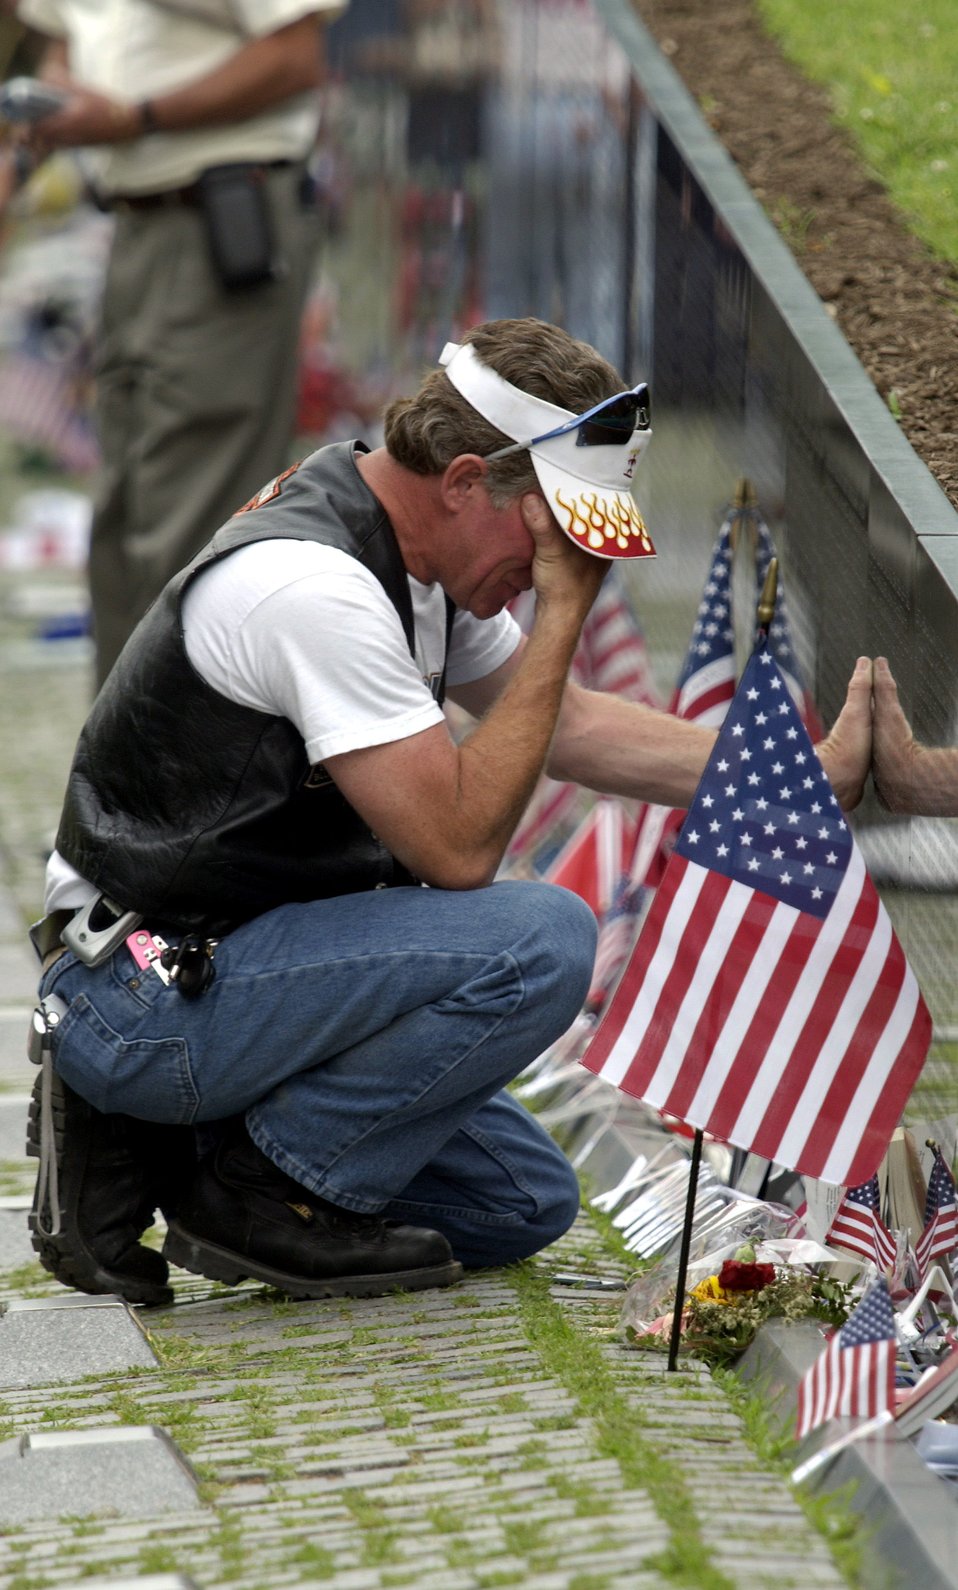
Vietnam wall speaks to both present and past

One of the more than 400,000 motorcyclists who participated in the 17th annual Rolling Thunder